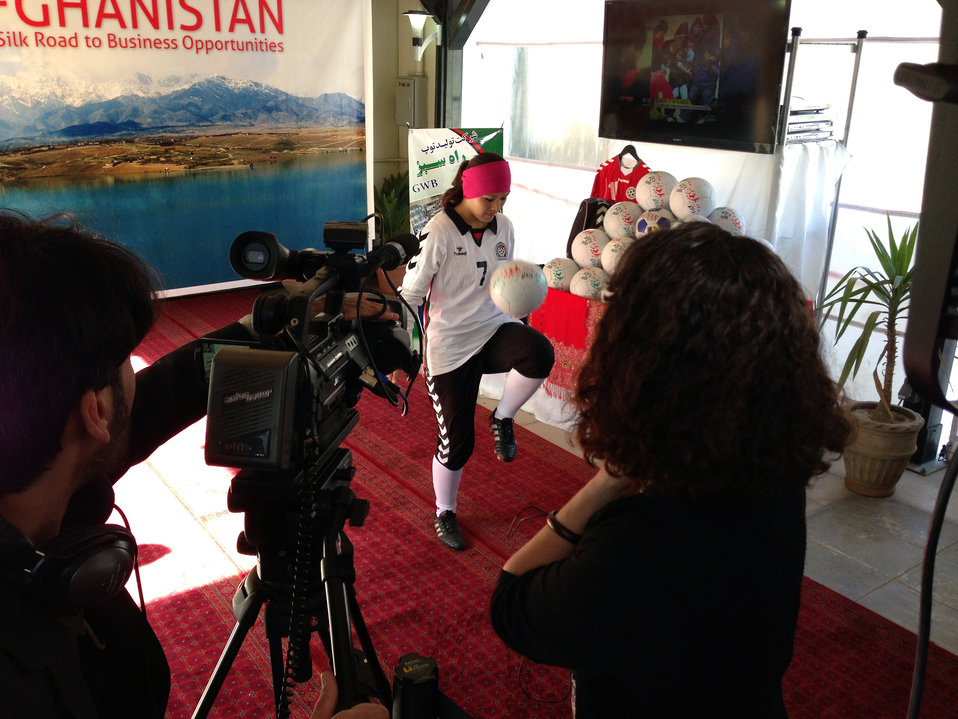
Secretary Kerry Tours Women’s Entrepreneurship Showcase in Kabul

Zahra Mahmoodi, captain of the Afghan women's national soccer team, juggles a soccer ball for the media amid a display of local businesses being toured by U.S. Secretary of State John Kerry on March 26, 2013.